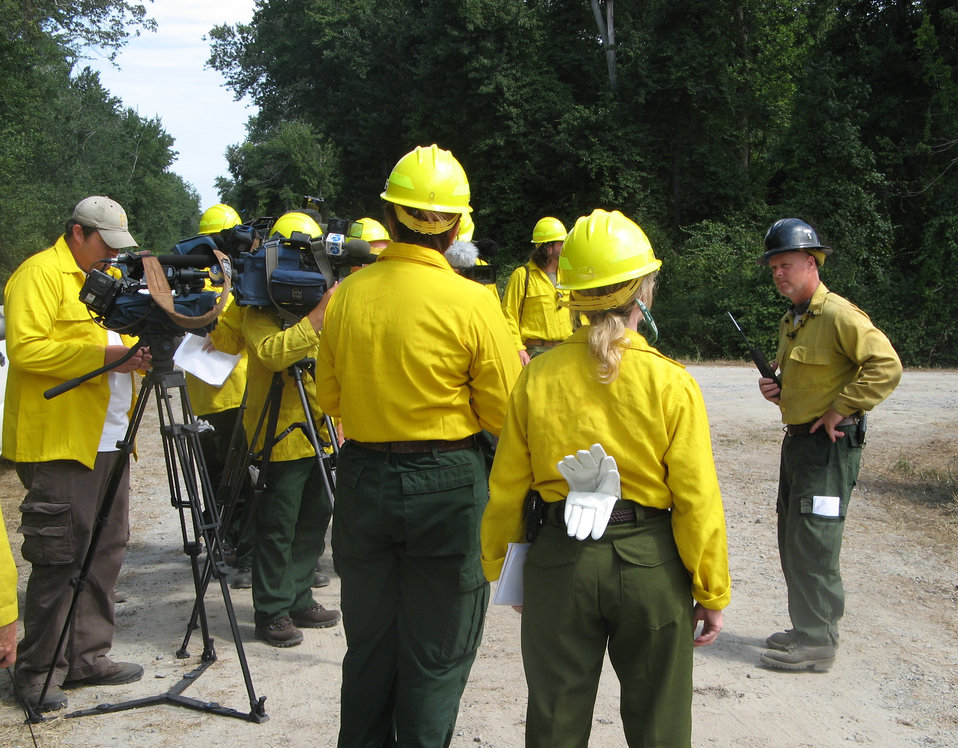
Firefighter talks to media

Suffolk, VA, Aug. 11, 2011. Jay Collett, a Division Supervisor on the Lateral West wildfire on Great Dismal Swamp National Wildlife Refuge explains how firefighters are managing the fire.